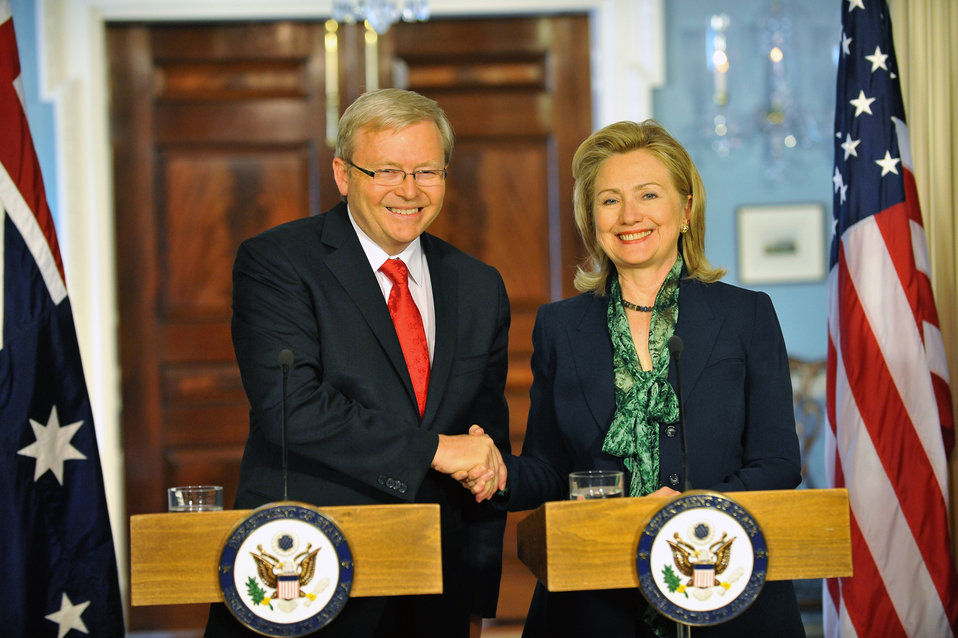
Secretary Clinton Shakes Hands With Australian Foreign Minister Rudd

U.S. Secretary of State Hillary Rodham Clinton shakes hands with Australian Foreign Minister Kevin Rudd after their bilateral meeting, at the U.S. Department of State in Washington, D.C., on May 2, 2011.